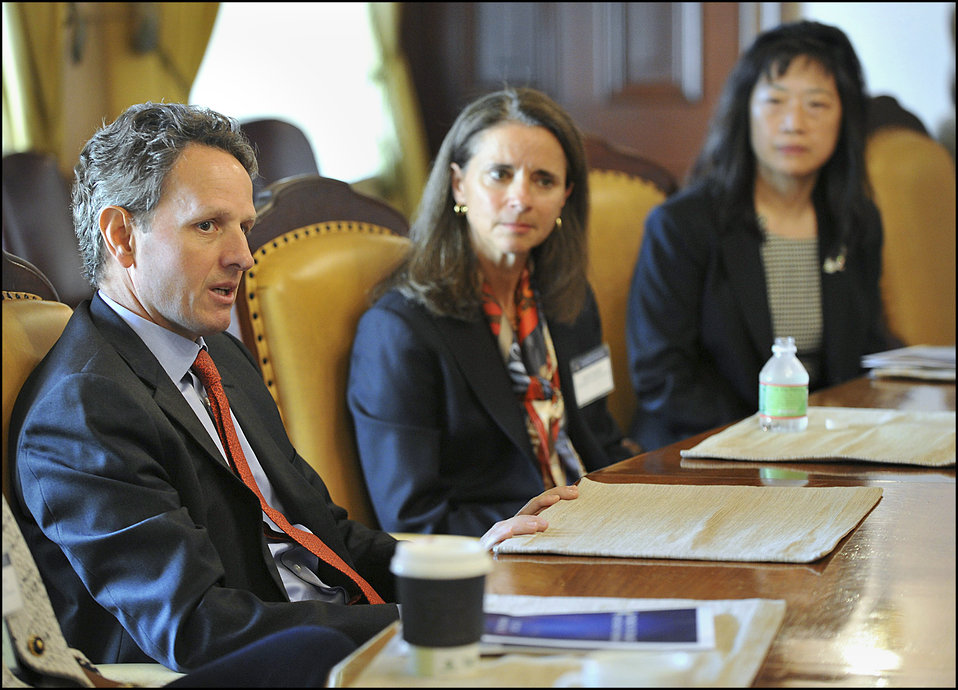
Women in Finance Investment Symposium

Secretary Tim Geithner, Assistant Secretary Mary Miller and senior Treasury officials hosted a breakfast for panelists.